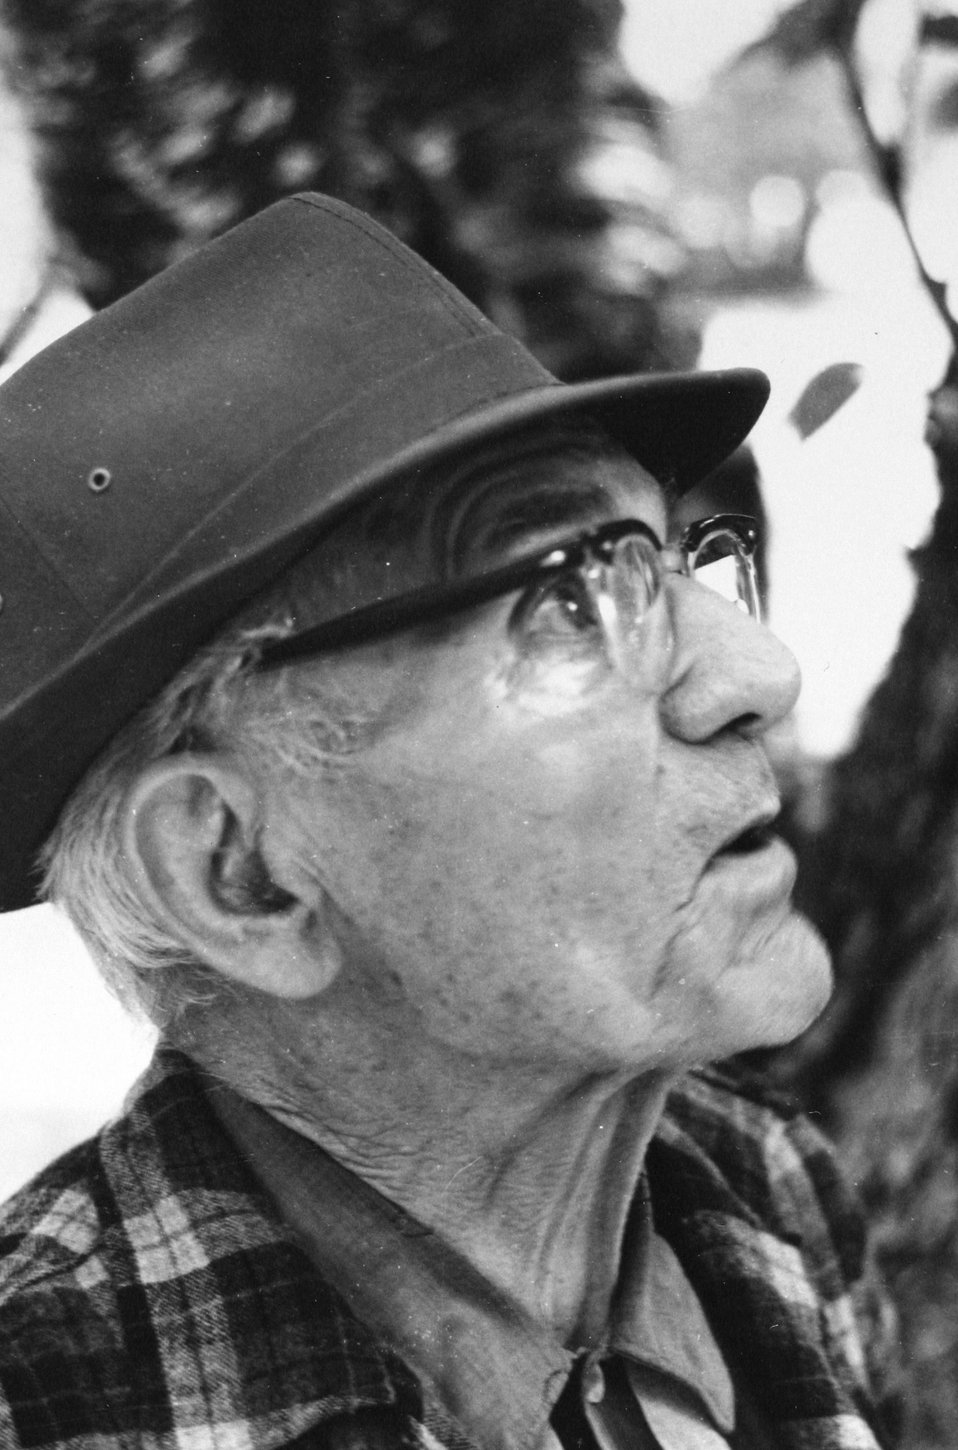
Ivin Billings C. 1977